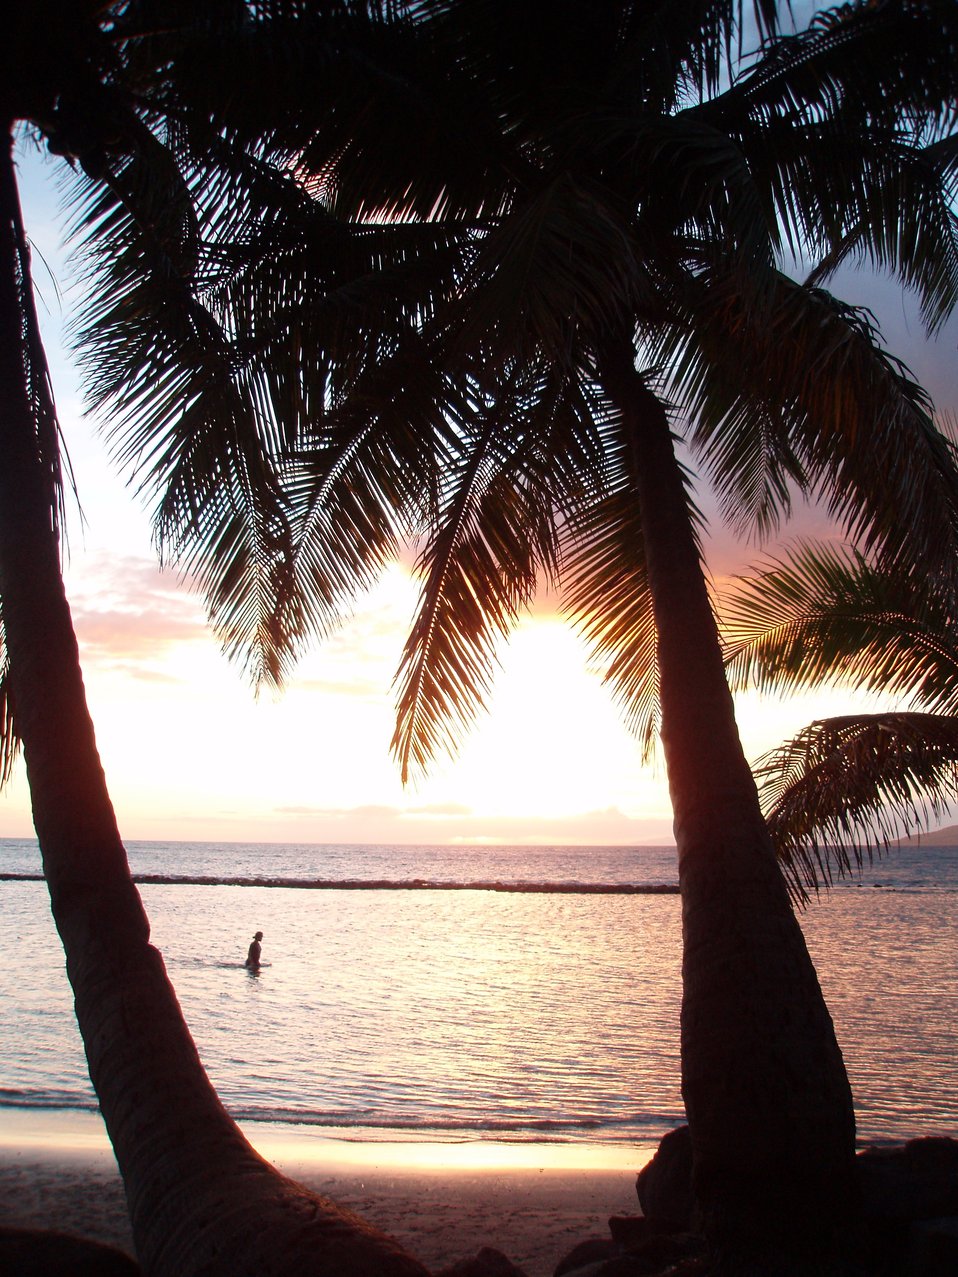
Swimming at sunset.